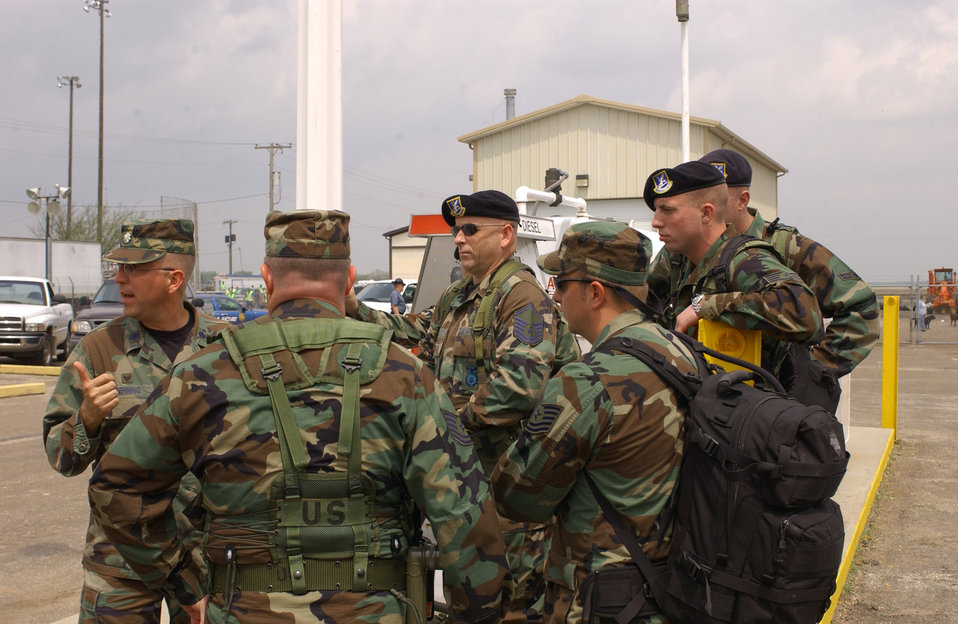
National Guard cleaning up devastated Kansas town

Airmen from the 184th Air Refueling Wing of the Kansas Air National Guard are briefed as they prepare to help in the aftermath of the May 4 tornado that struck Greensburg, Kan. Around 500 Army and Air National Guardmembers are in Greensburg removing debris, providing security, generating power, preparing food and performing other disaster relief functions.